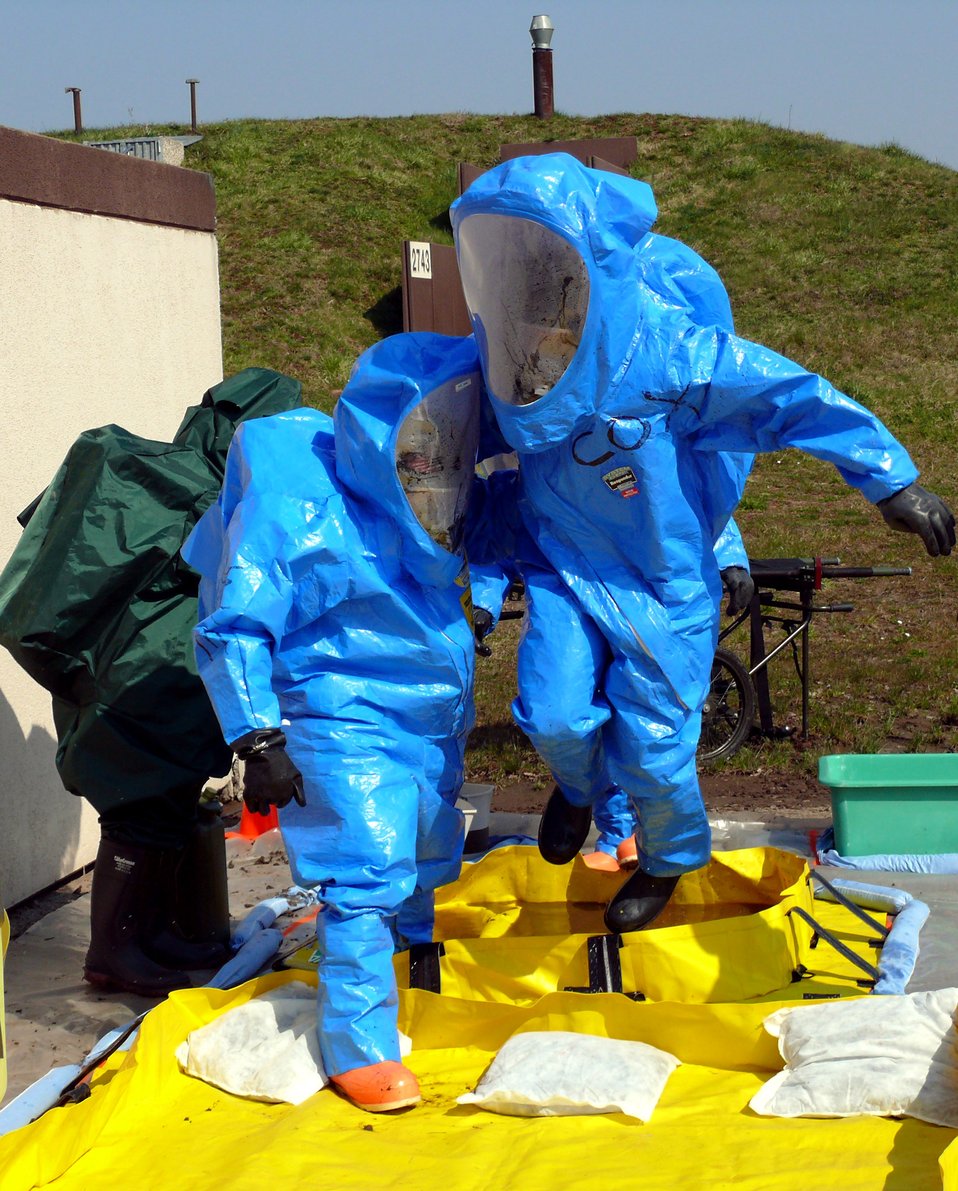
Airmen, Soldiers jointly hone chemical response skills

An Airman and a Soldier jump into a tub of cleaning solution during training, after entering a bunker housing a simulated chemical weapons lab April 12 at Ramstein Air Base, Germany. Responders from the Army and Air Force are training together at a chemical response exercise so they can respond as a single unit if needed.